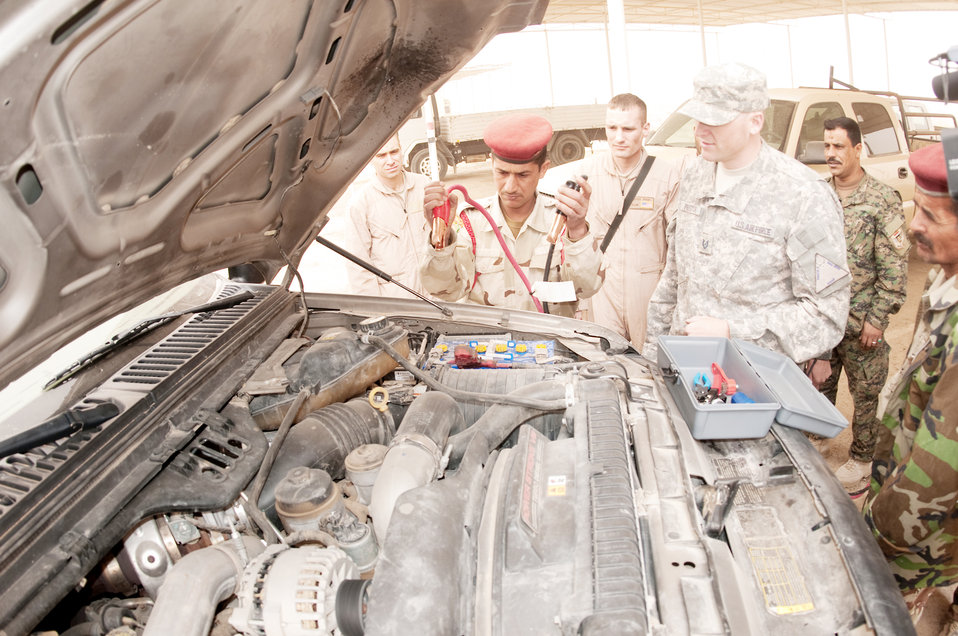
Coalition forces team up for vehicle training

Tech. Sgt. Scott Preston tests Iraqi army students on the sequential placing of jumper cables on a charged battery during a training course Feb. 22, 2010, at Camp Ur, Iraq. Sergeant Preston is assigned to the Logistics Military Advisory Team.